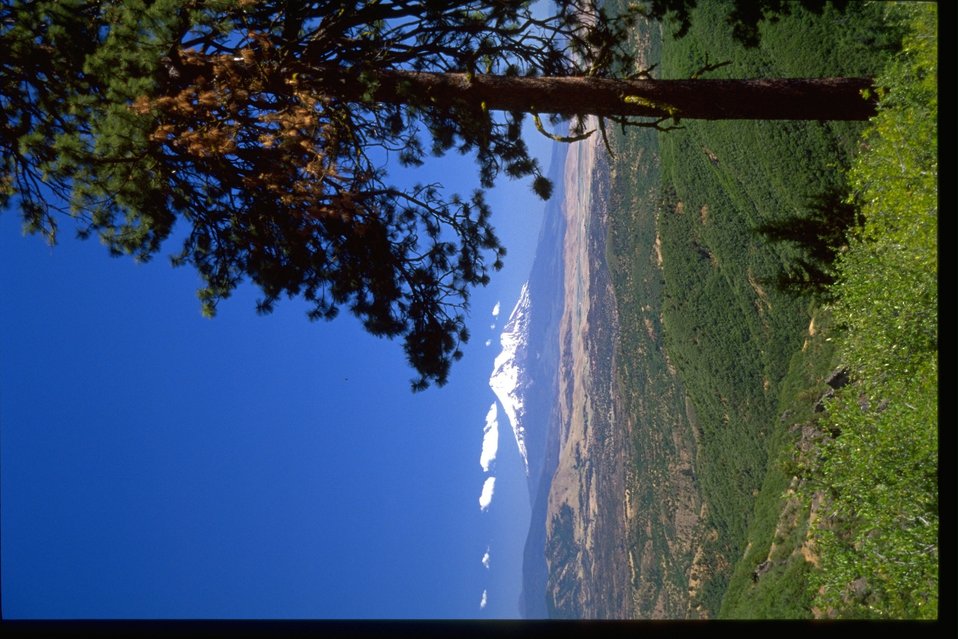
Mount Shasta.